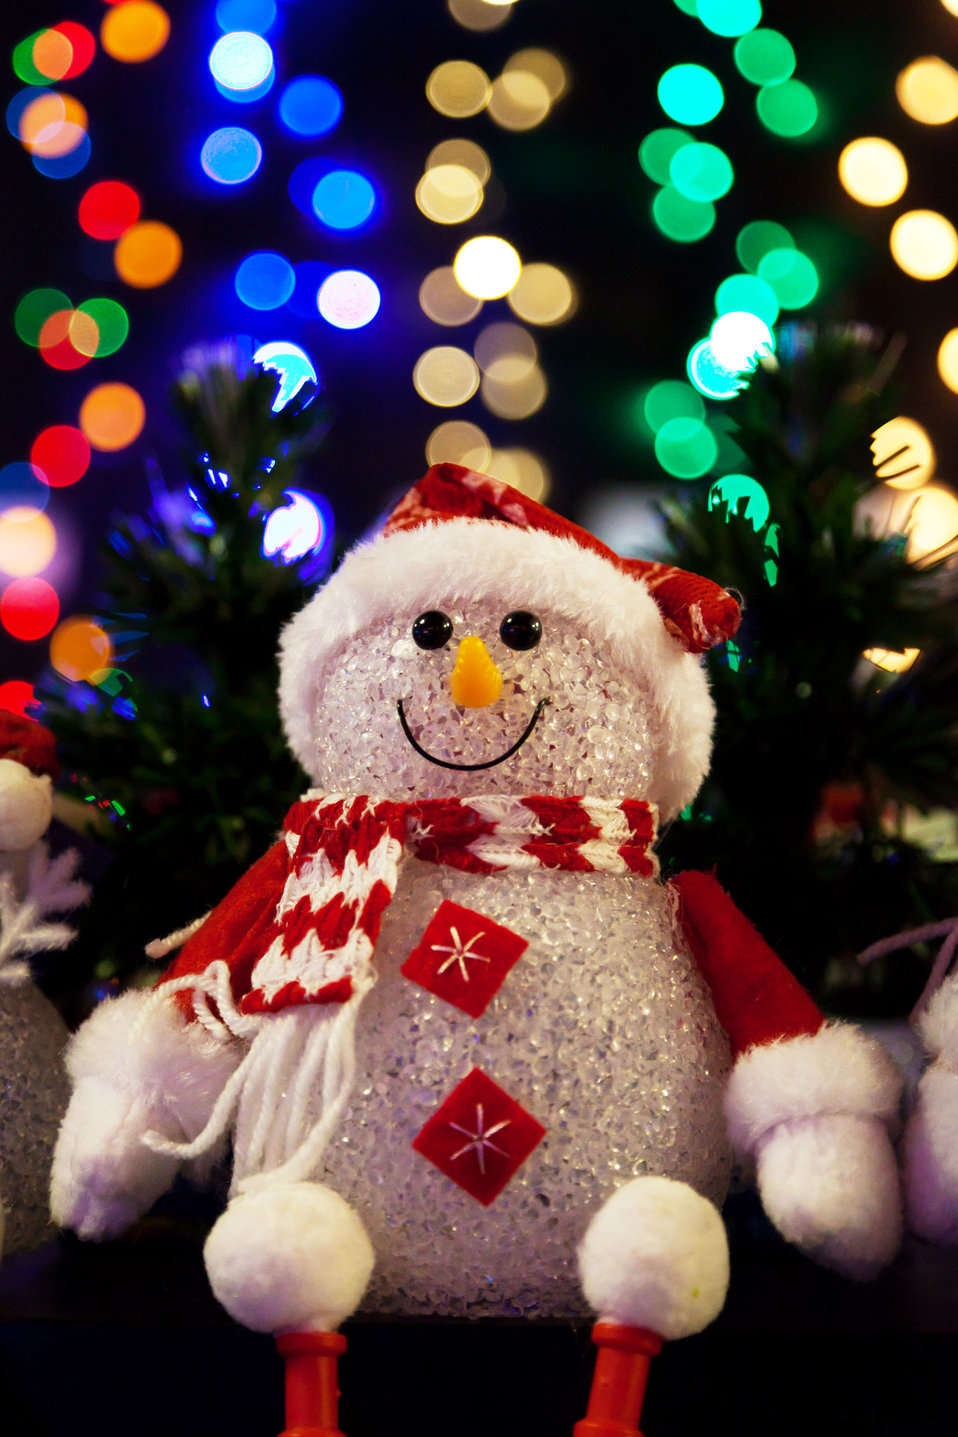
Christmas snowman decoration with blurred colorful lights in the background.